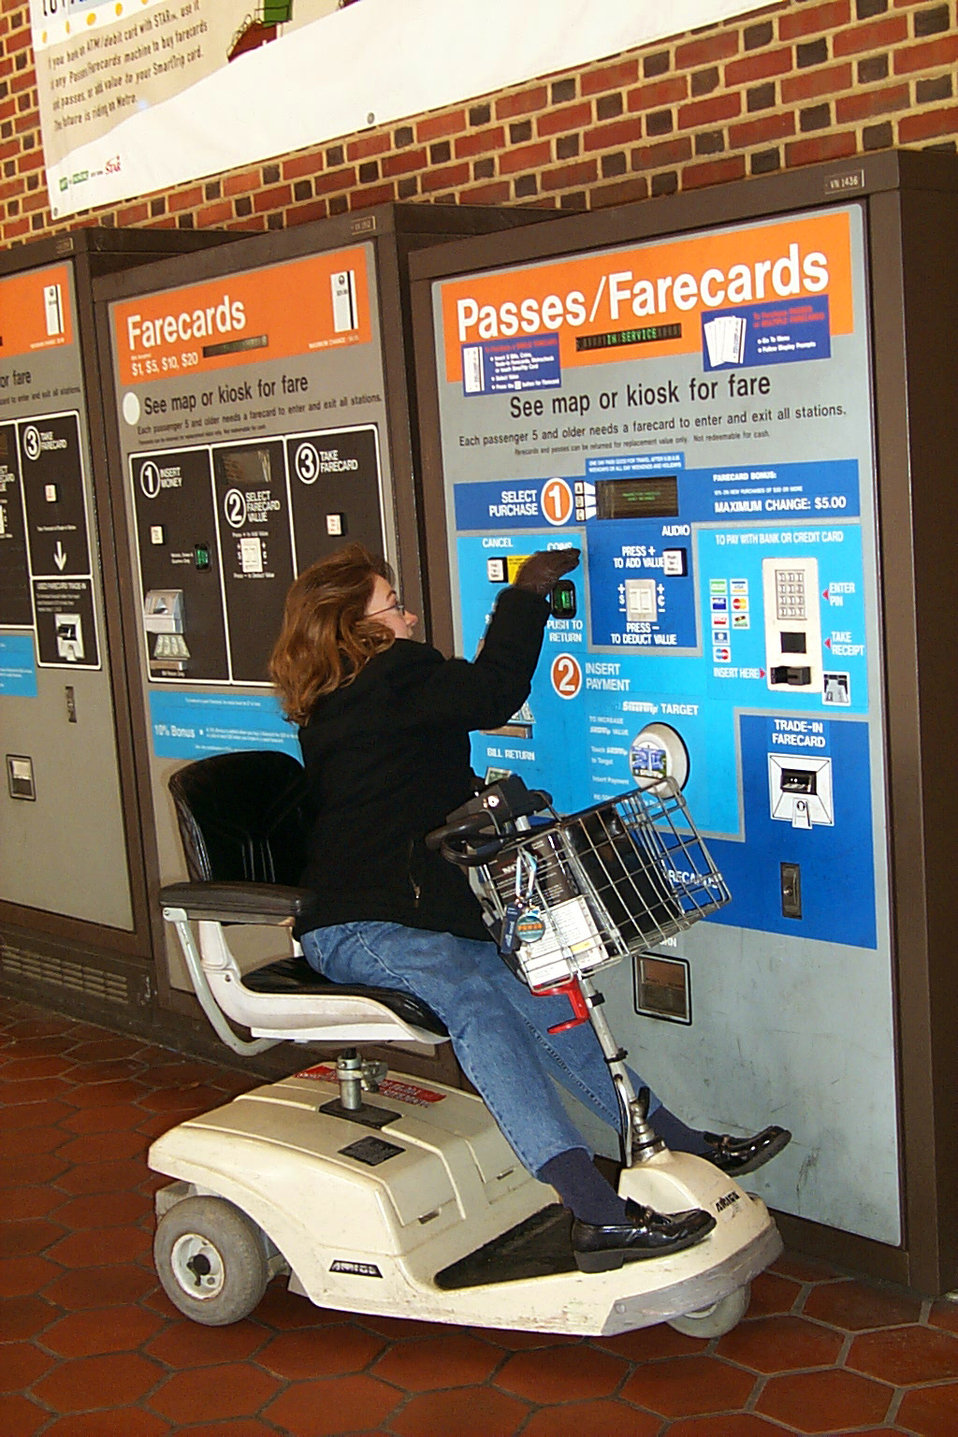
Depicted in this 2004 image was a wheelchair-seated woman who was in the process of purchasing a ticket from an automatic ticket dispensing machine at a mass transit train station. Self-serve ticket dispensing machine controls should be within easy reach, have audible and visual output announcing confirmation of actions, and be equipped with tactile instructions. This machine met these characteristics. However, the reach required is a little too high for easy control panel interaction. The machine's interface needed additional study to make it more universal, with more consideration paid to the mobility-impaired. 'The Center for Universal Design (CUD) is a national research, information, and technical assistance center that evaluates, develops, and promotes accessible and universal design in housing, buildings, outdoor and urban settings and related products.'